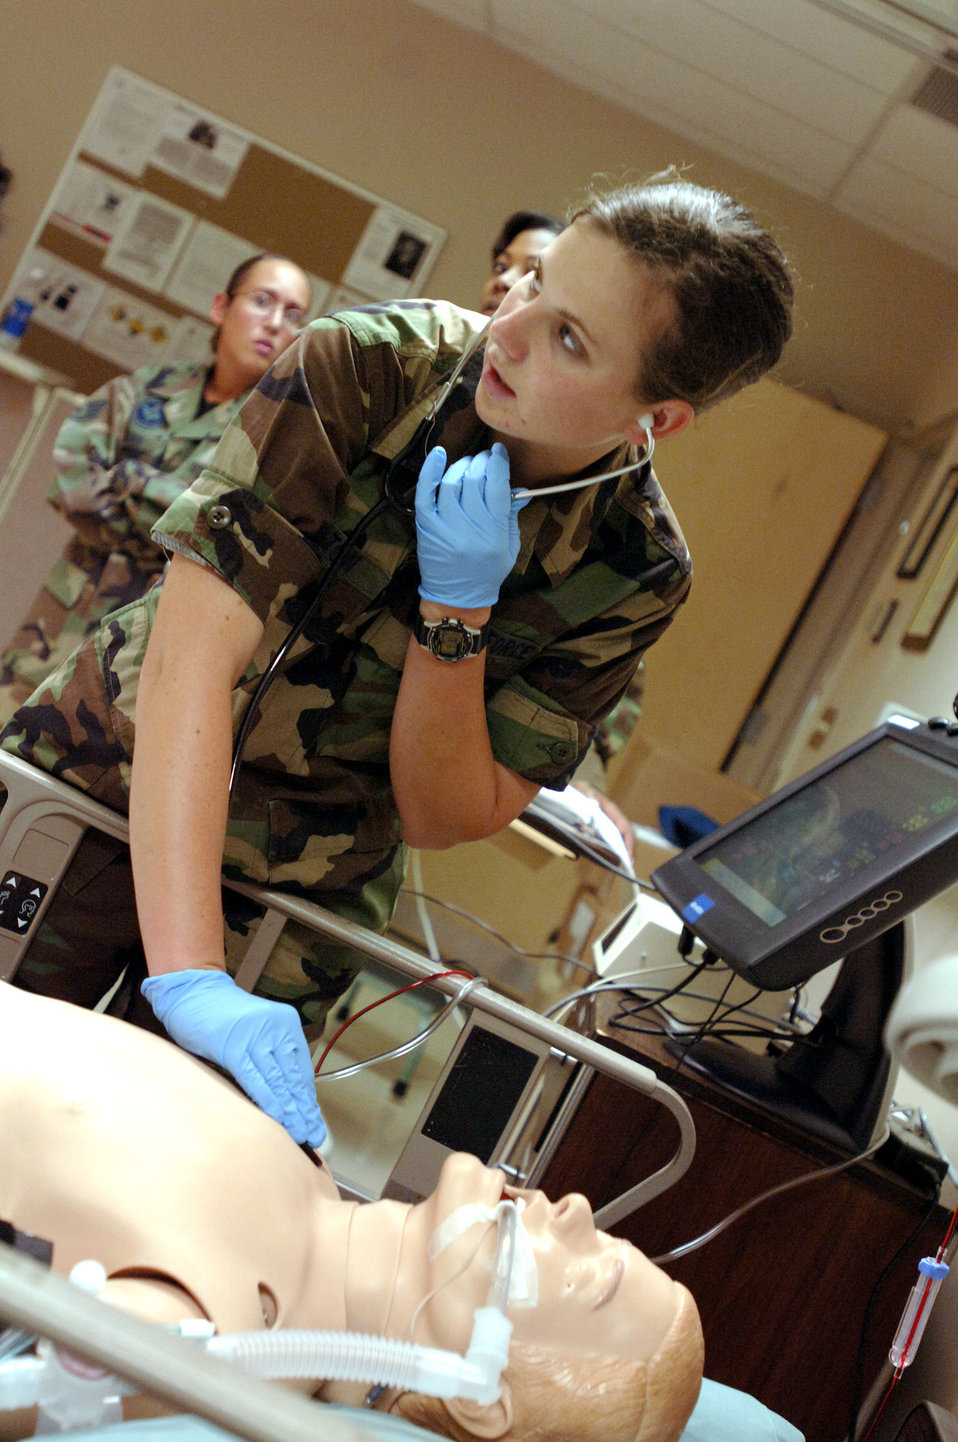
'New' patients make training more realistic

Airman Basic Nicole Walton attempts to diagnose the symptoms of a simulated patient during technical training on Friday, July 21, at Sheppard Air Force Base, Texas. The simulated patient is one of seven new advanced medical tools used to help Air Force medical technical training students receive realistic instruction.